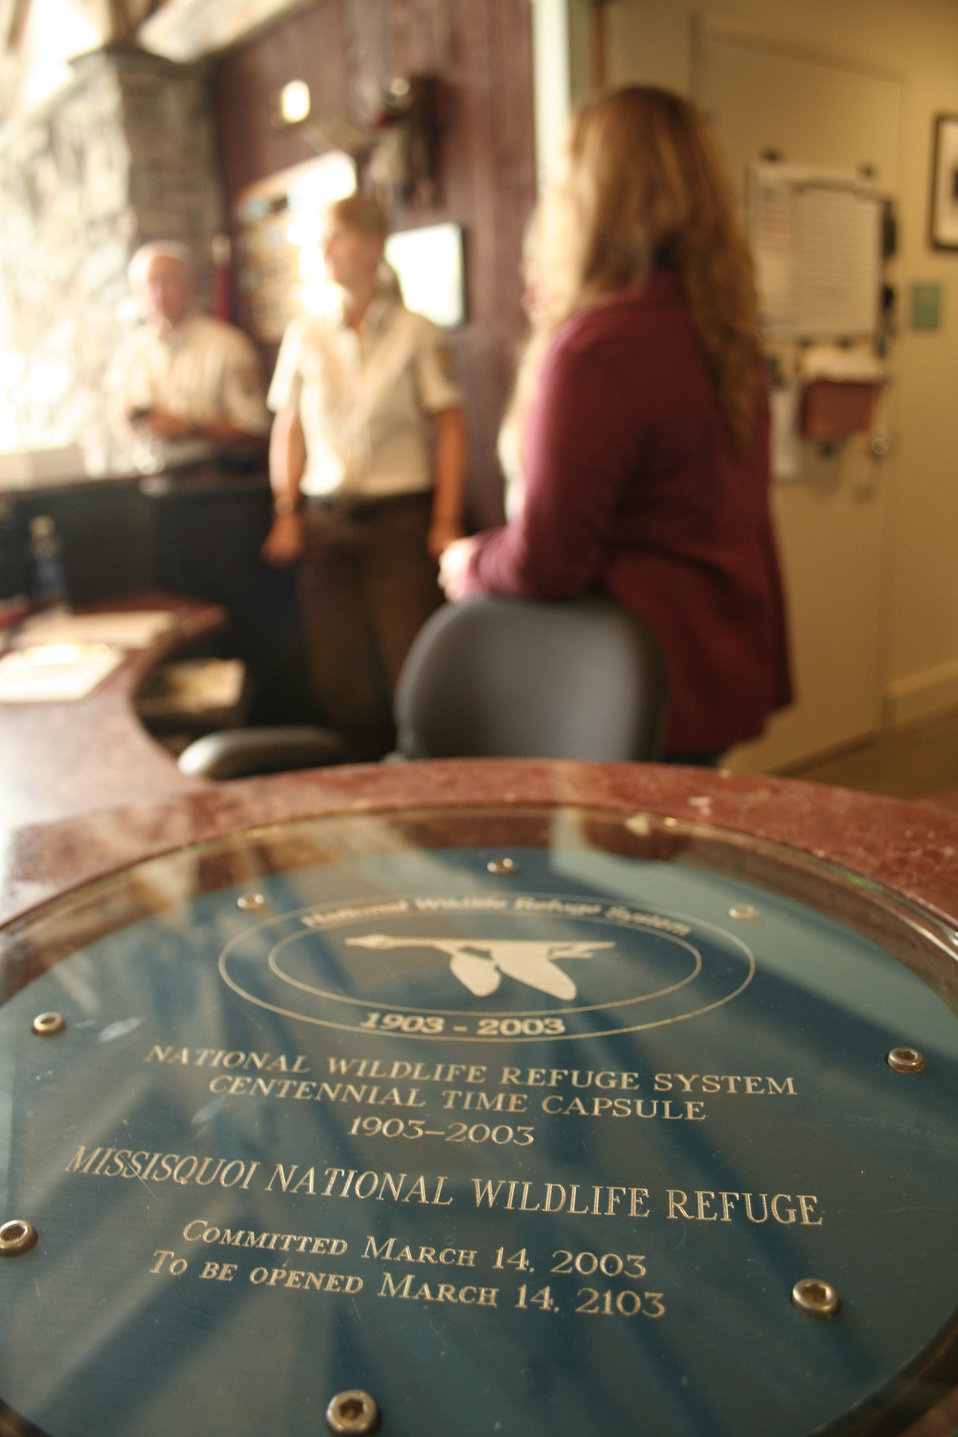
NWRS Centennial time capsule in Missisquoi NWR Visitor Center

National Wildlife Refuge System Centennial (1903-2003) time capsule in Missisquoi NWR Visitor Center.